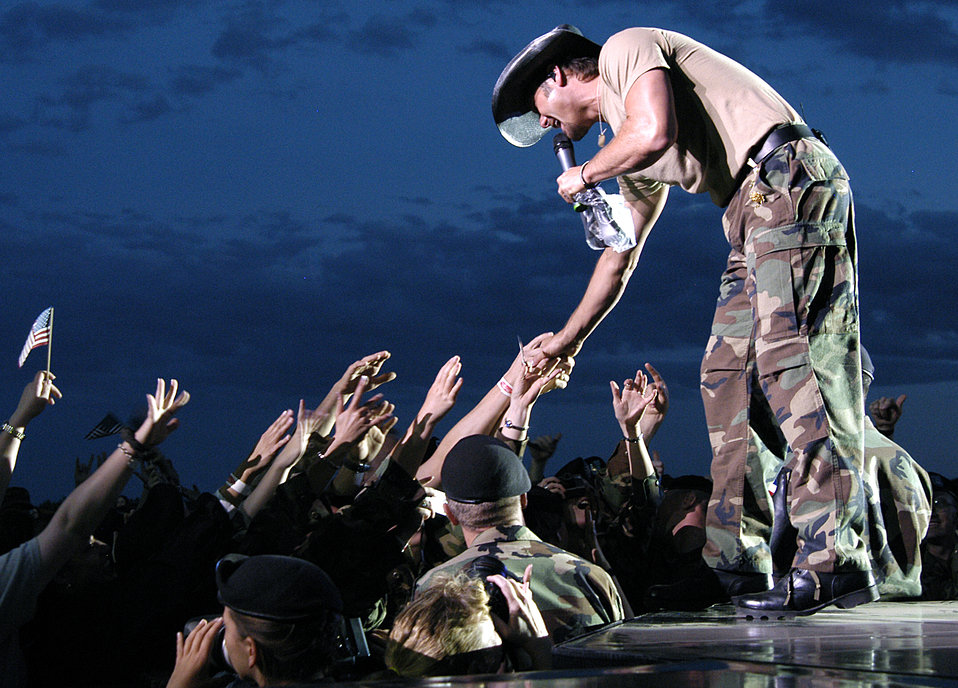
Fan appreciation

FORT CARSON, Colo. (AFPN) -- Tim McGraw shakes the outstretched hands of military and family members at a free concert here May 21. He put on the free concert to show appreciation for the military.